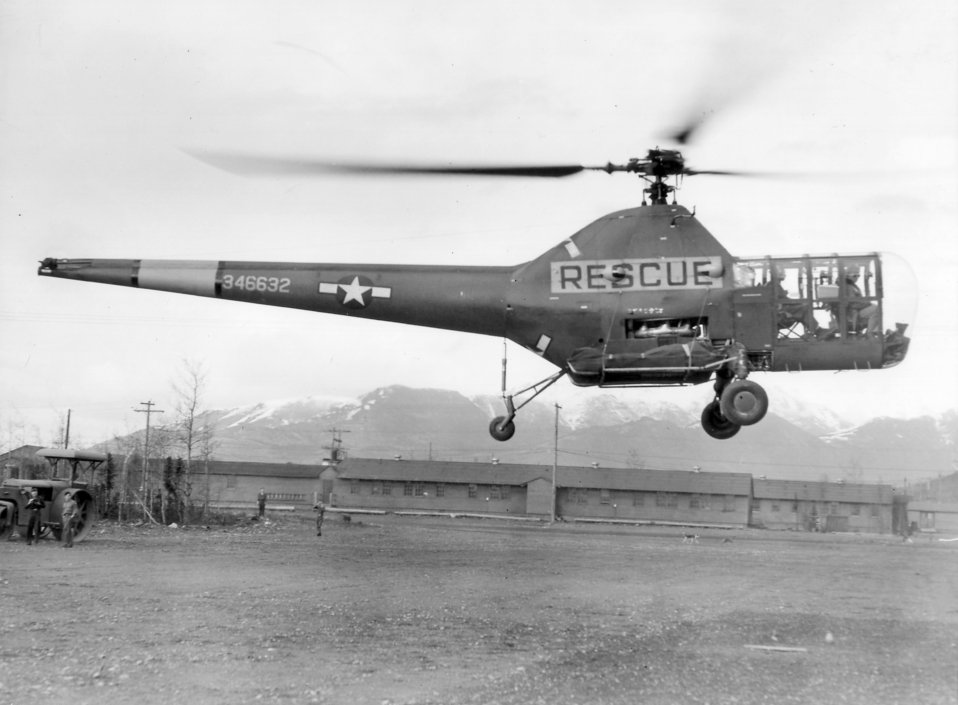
10th Rescue Squadron helicopter

1940's -- Fort Richardson, Alaska, 17 May 1947, 10th Rescue Squadron helicopter, shown landing at 183rd General Hospital, Fort Richardson, after picking up injured members of a squadron. The area in which the craft was landed is normally used as a baseball diamond.